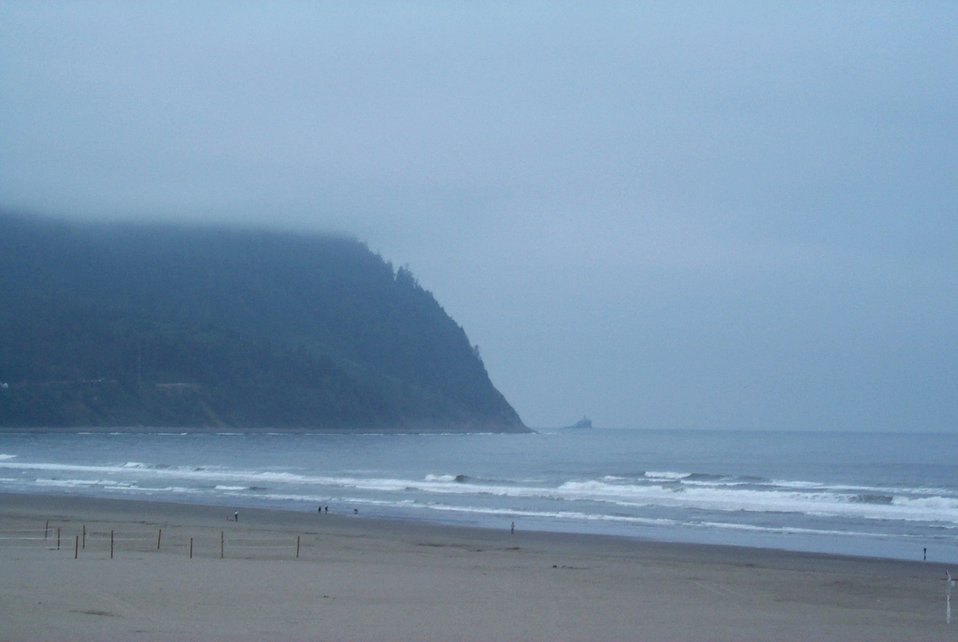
Mist coming in on Tillamook Head looking south from Seaside.